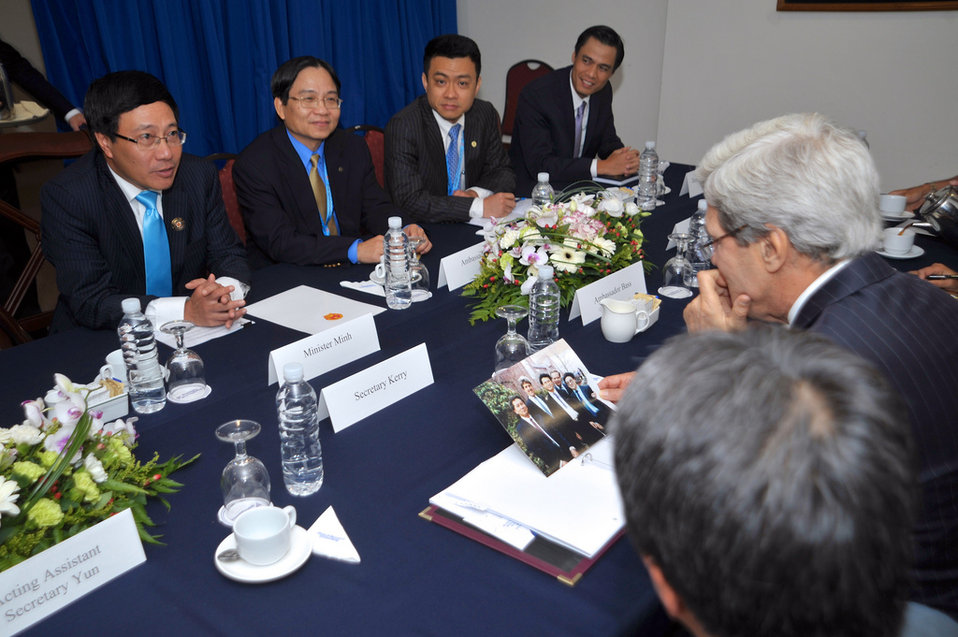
Secretary Kerry Admires Gift From Vietnamese Foreign Minister

U.S. Secretary of State John Kerry looks at a photo of himself and the future Foreign Minister of Vietnam, Pham Binh Minh, after Minh presented him with a picture of the two taken over 20 years ago at Tufts University in Massachusetts. They were reunited for a bilateral meeting between their countries in Bandar Seri Begawa, Brunei, on July 2, 2013.